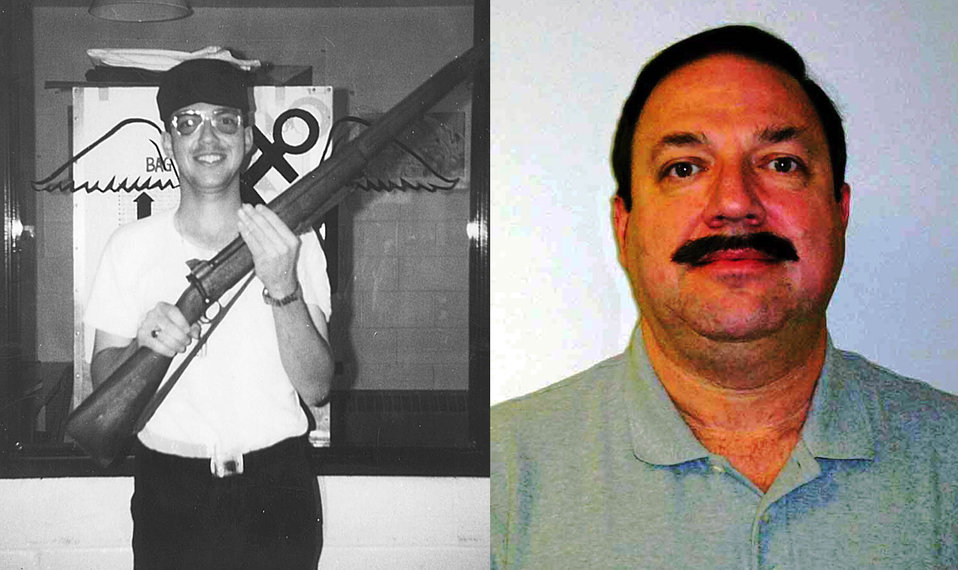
Chuck Underwood – Public Affairs – North Florida Field Office.
Charles G. “Chuck” Underwood Jr. entered the U.S. Navy in May 1973. During his military career was assigned to units in Japan, Guam, Republic of the Philippines (RP), Georgia, and Florida. Underwood also performed special assignments or visited ports in Korea, Hong Kong, Singapore, Thailand, Vietnam, Australia, New Zealand, Kenya, Spain, France, Italy, Greece, Turkey, Israel, Egypt, and numerous Marianas Trust Territory islands. He retired from the Navy as a Senior Chief Journalist (E8) in November 1993. .
.
He reentered government service as the public affairs officer at Naval Air Station Cecil Field in Jacksonville, FL and Red River Army Depot in Texarkana, TX before assuming his current duties as the Public Affairs Officer for the U.S. Fish and Wildlife Service’s North Florida Ecological Services Office in Jacksonville, FL in January 2000. .
.
Underwood’s professional awards included three Meritorious Civilian Service Awards, two Department of Defense Thomas Jefferson Awards in broadcast production, eight U.S. Navy Chief of Information Merit Awards in print journalism and broadcast production, and numerous meritorious civilian performance awards.